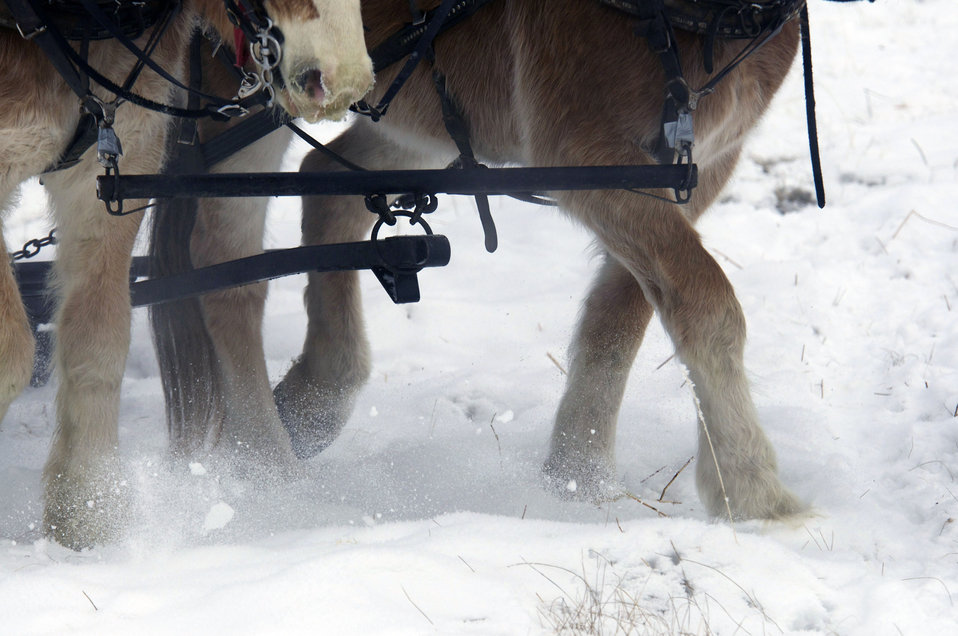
Bred to Pull

The sleigh ride contractor uses primarily Percheron and Belgian horses, both strong breeds that are willing to work.

Credit: USFWS / Mike Nordell, winter naturalist